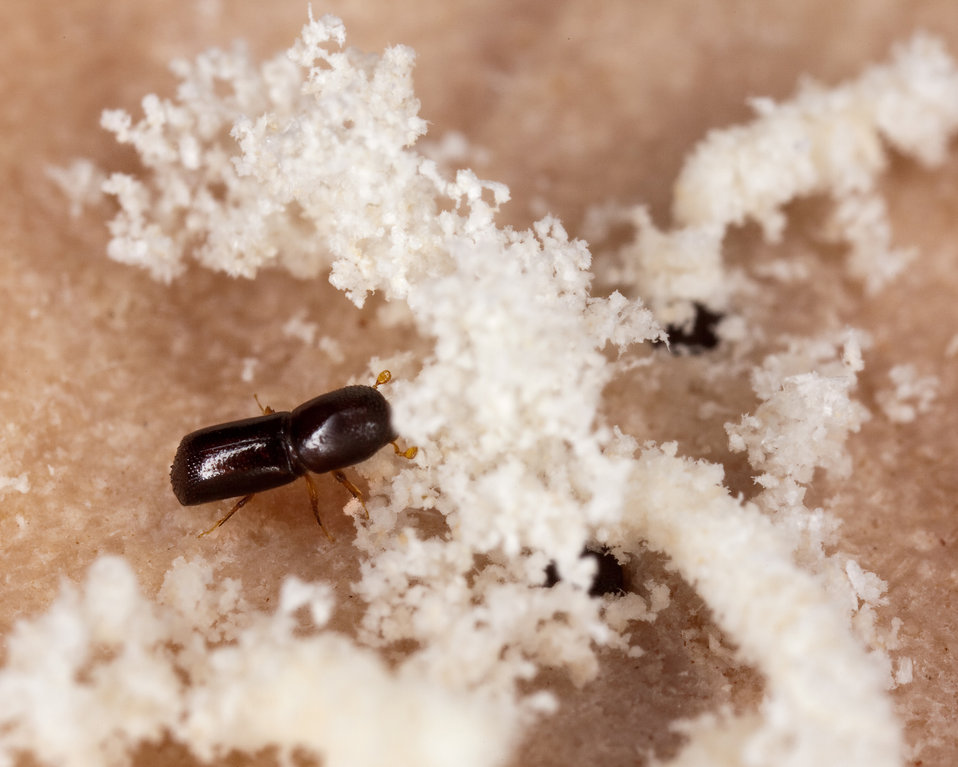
An indicator of ambrosia beetle infestation is “sawdust” around the beetle’s entry hole as shown here with another female redbay ambrosia beetle on May 21, 2012.